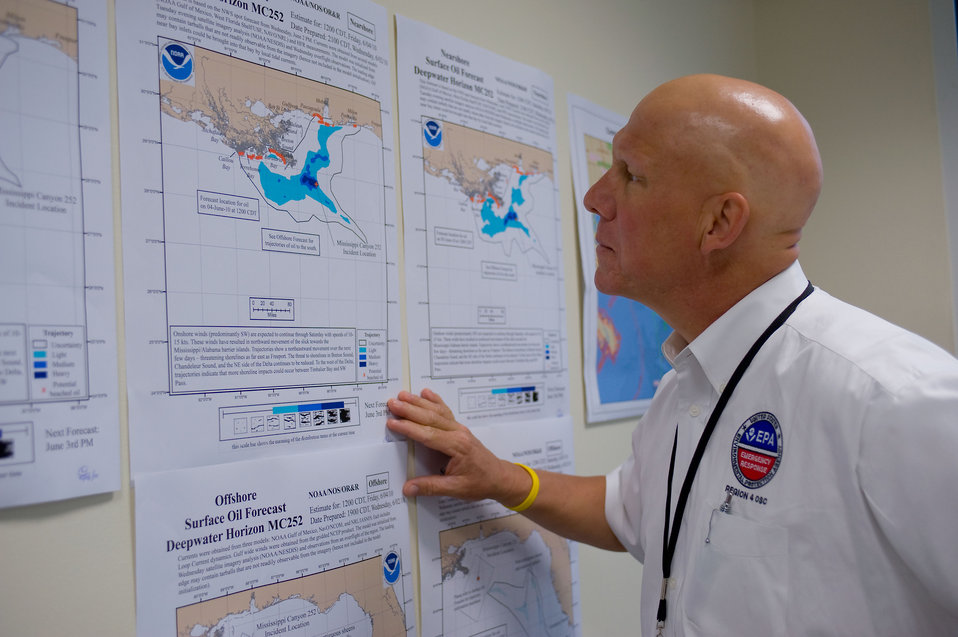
June 3, Tracking oil locations in Gulf

Numerous agencies are at work around the clock at the Mobile, Ala command post.